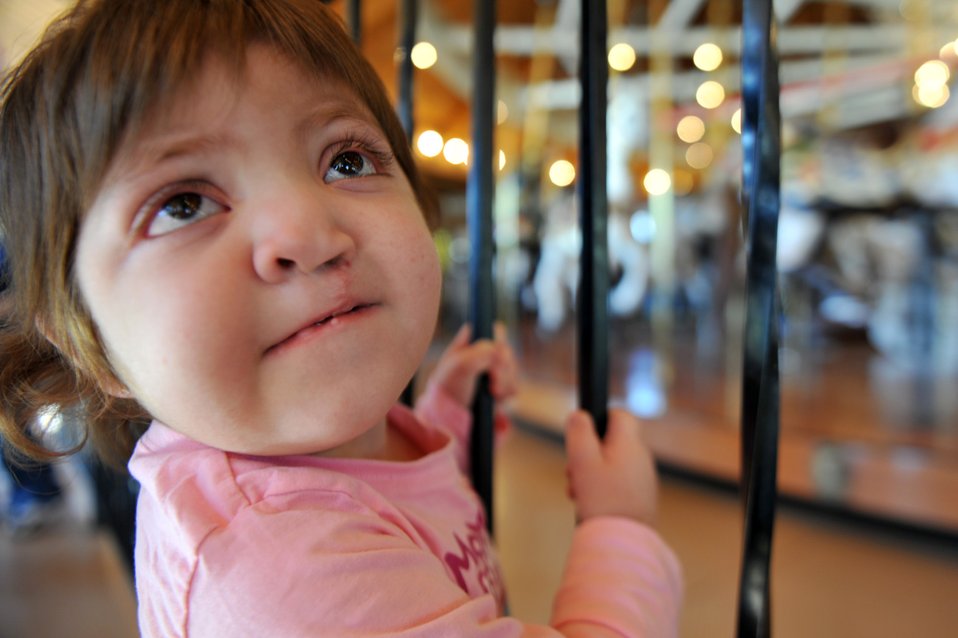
Exceptional Family Member Program

Braelyn Whitford looks up at her dad before getting ready to ride the Looff Carrousel in Spokane, Wash., on Apr. 9, 2011. Braelyn is diagnosed with Kabuki Syndrome. Braelyn and her family are assisted through the Exceptional Family Member Program which connects active duty family members who have special needs with many helping agencies both on- and off- base.